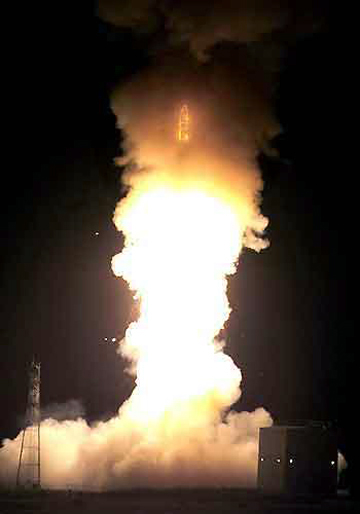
Minuteman III successfully launches

VANDENBERG AIR FORCE BASE, Calif. -- An unarmed Minuteman III intercontinental ballistic missile was successfully launched from here Sept. 15 at 1:01 a.m. The purpose of the launch was to verify the continued reliability and accuracy of the Minuteman III ICBM force. The missile's three unarmed re-entry vehicles traveled nearly 4,200 miles in about 30 minutes, hitting a predetermined target at the Kwajalein Missile Range in the western chain of the Marshall Islands.